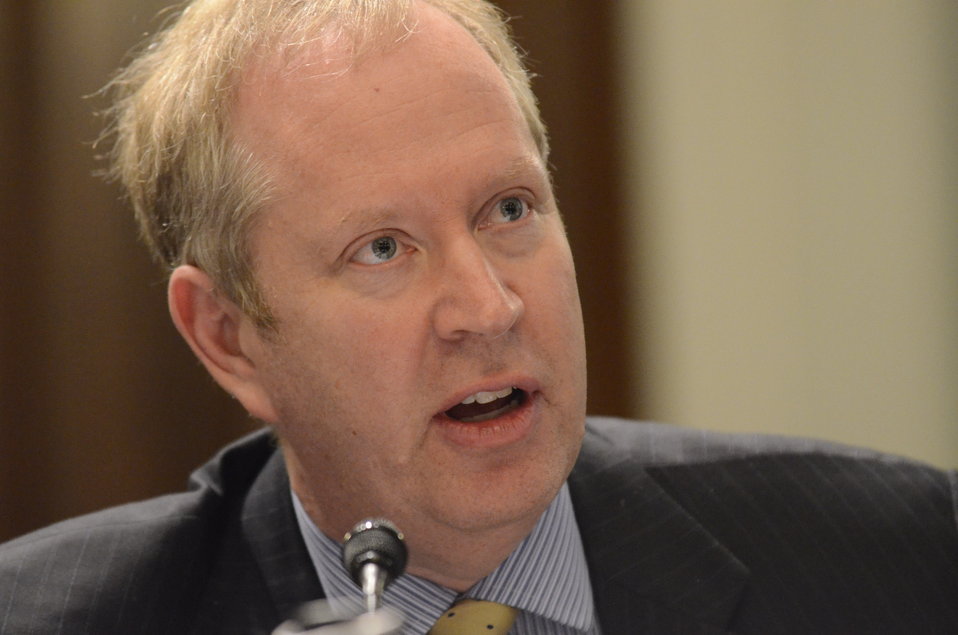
Dinsmore & Shohl LLP partner Mr. Reed D. Rubinstein testifies on Retailers & Entertainers Lacey Implementation & Enforcement Fairness Act & Freedom from Over-Criminalization & Unjust Seizures Act at the Longworth House Office Building in Washington, D.C. on Tuesday, May 8, 2012.